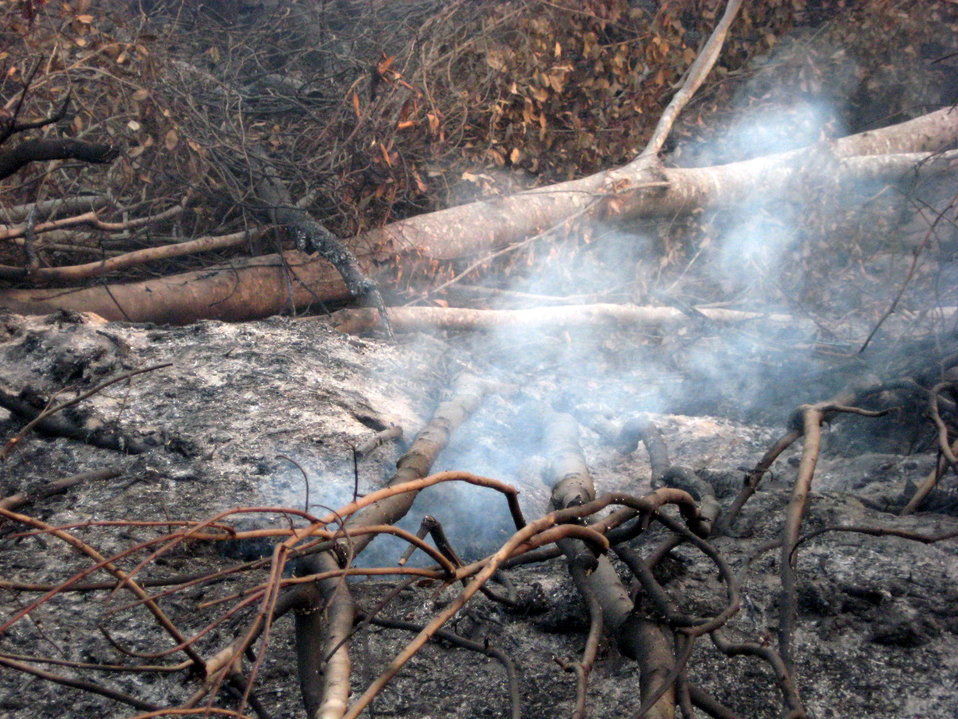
Skunk, bake, pop!

Suffolk, VA, August 2011: A frequent sequence of events at the Lateral West Fire in Great Dismal Swamp was: ground fire skunking around and burning peat from under tree roots; trees falling on the hot peat and baking; then trees bursting into flames.